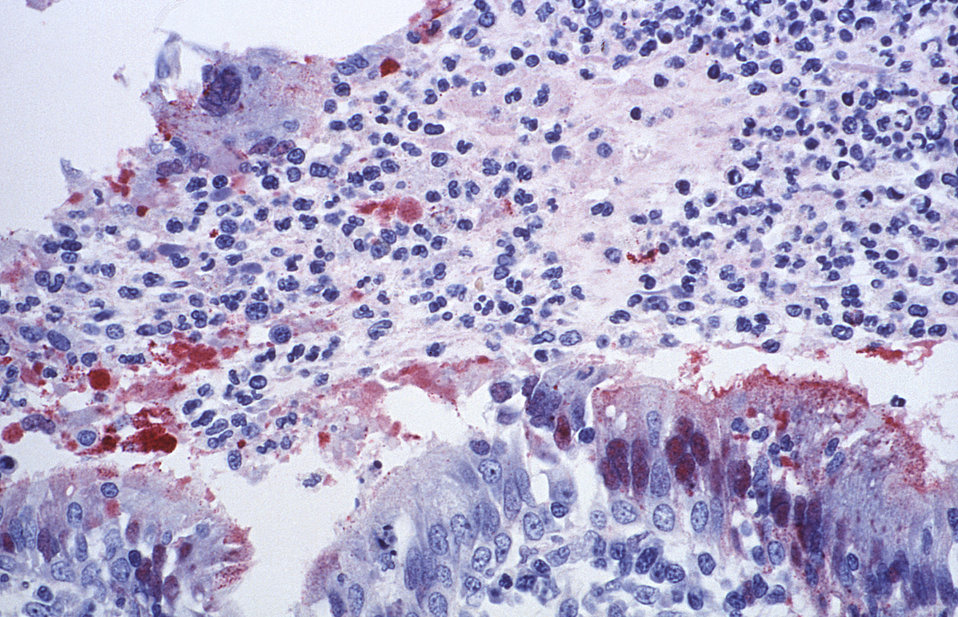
Using immunohistochemical (IHC) technique, this photomicrograph of a sample of tissue from an unknown animal's lung, revealed cytoarchitectural changes in the trachea and bronchioles brought on by a Nipah virus infection.